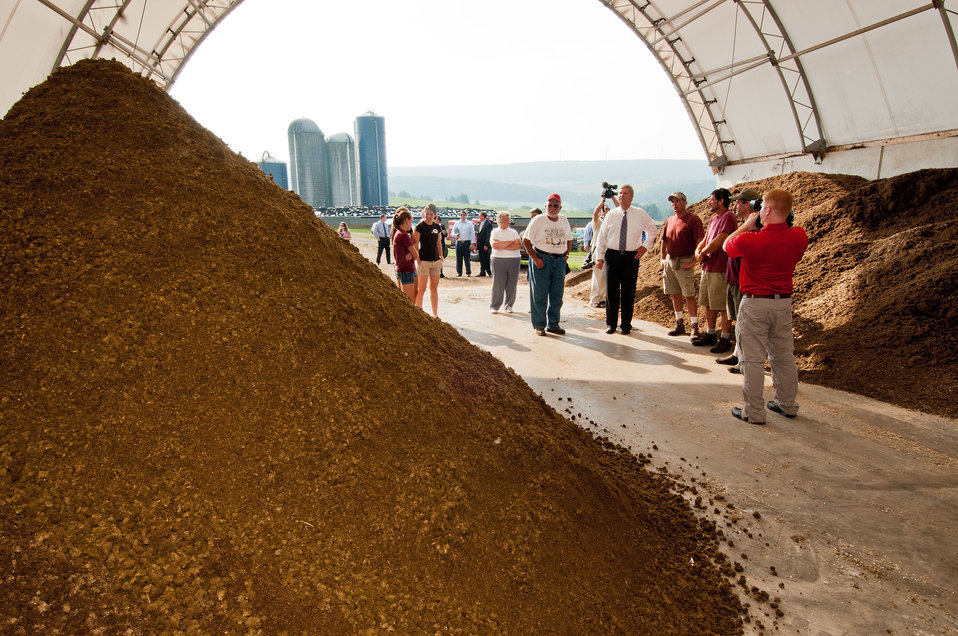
From left: James Ringler, Glenn Stoltzfus, Agriculture Secretary Tom Vilsack, Duane Stoltzfus and Dwight Stoltzfus. The Stoltzfus brothers explain how the compost solids are produced from their anaerobic digester. An anaerobic digester is a component of a waste management system that captures biogas for energy production a byproduct of this system are compost solids that are used for bedding for the dairy’s cattle. The anaerobic digester practice is part of a planned conservation management system that manages manure and/or comprehensive nutrient management system. Secretary Vilsack visited the Stoltzfus’ Pennwood Dairy Farms in Berlin, PA on Tuesday, July 17, 2012 to announce the U.S. Department of Agriculture’s (USDA) energy efficiency programs and announced a new effort to help rural consumers make affordable, energy-efficient improvements to their homes and businesses.